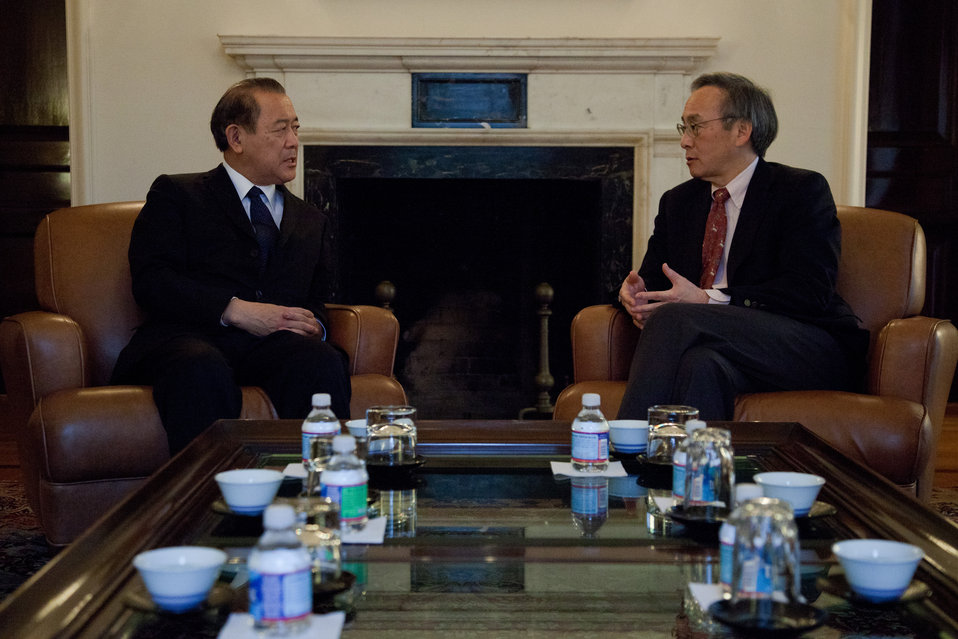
Sec. Chu visits Japanese Embassy 7 of 8

Sec. Steven Chu meets with Japanese Ambassador to the United States, Ichiro Fujisaki.